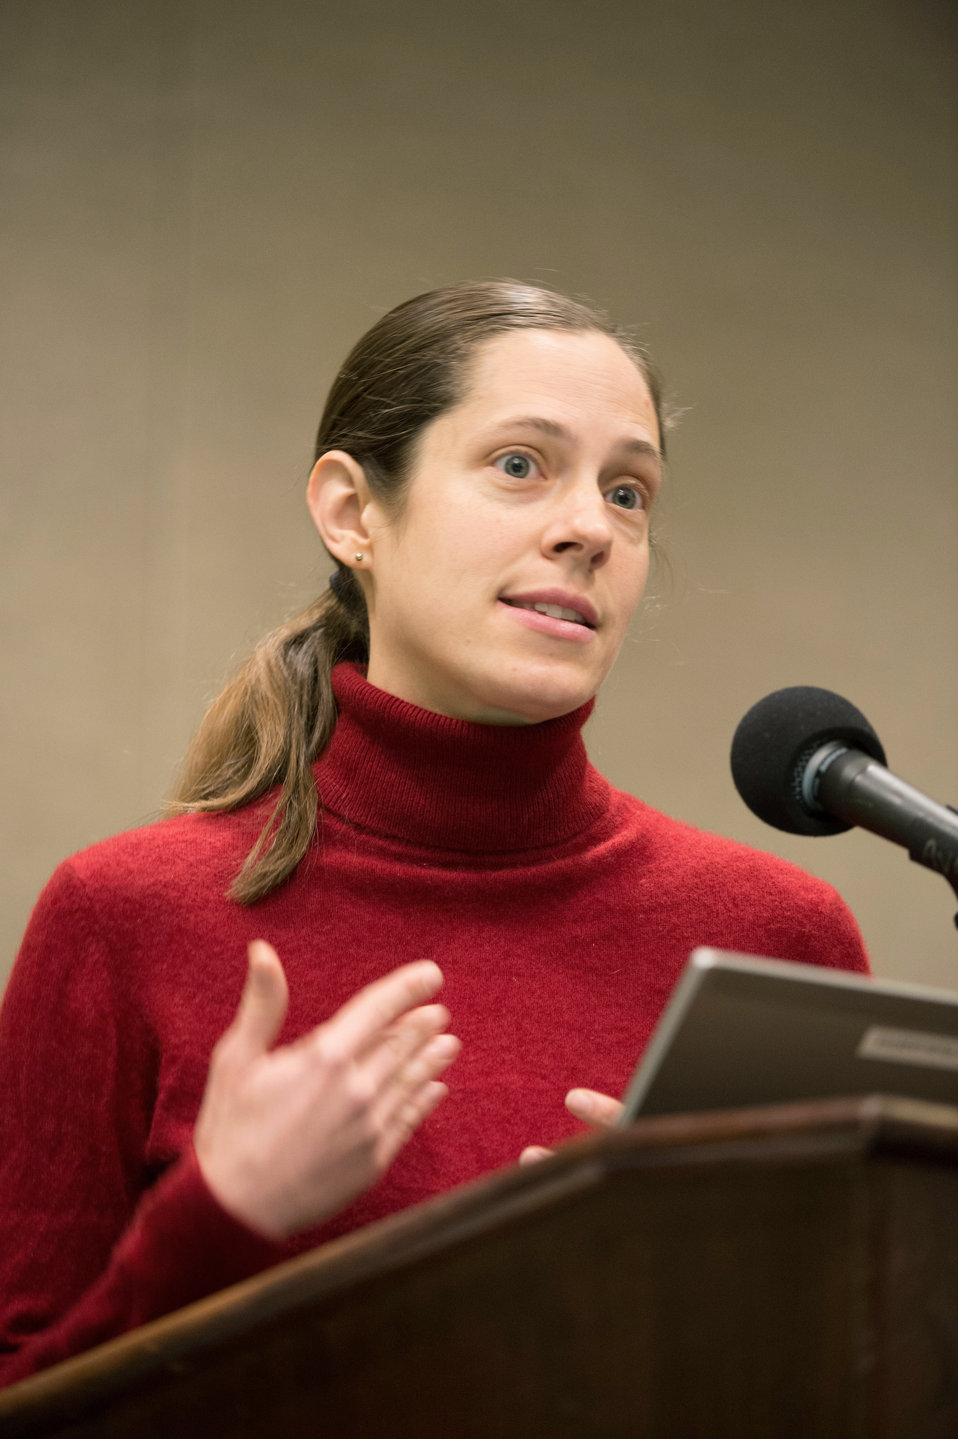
National Young Farmers Coalition Interim Director Emily Oakley speaks at the plenary panel on Know Your Farmer, Know Your Food: The Past, Present and Future at the Agricultural Outlook Forum on Friday, Feb. 21, 2014 in Arlington, VA. The panel reviewed the goals and objectives of Know Your Farmer, Know Your Food (KYF2) initiative. The panel spoke about how the initiative works; what has been accomplished to date; how local food systems can use KYF2 and other U.S. Department of Agriculture (USDA) programs to improve the supply, distribution, and demand for local foods; how KYF2 and Federal –State-local partnerships work together to promote local food production and distribution; and highlighted the initiative’s work to grow the local food economy in Appalachia. The U.S. Department of Agriculture’s (USDA) annual Agricultural Outlook Forum brings together the agricultural community to discuss policy, trade, science, rural development, and the economic outlook for the coming year. The Forum also focuses on forestry, health and nutrition issues, and the changing dynamics and face of rural America.